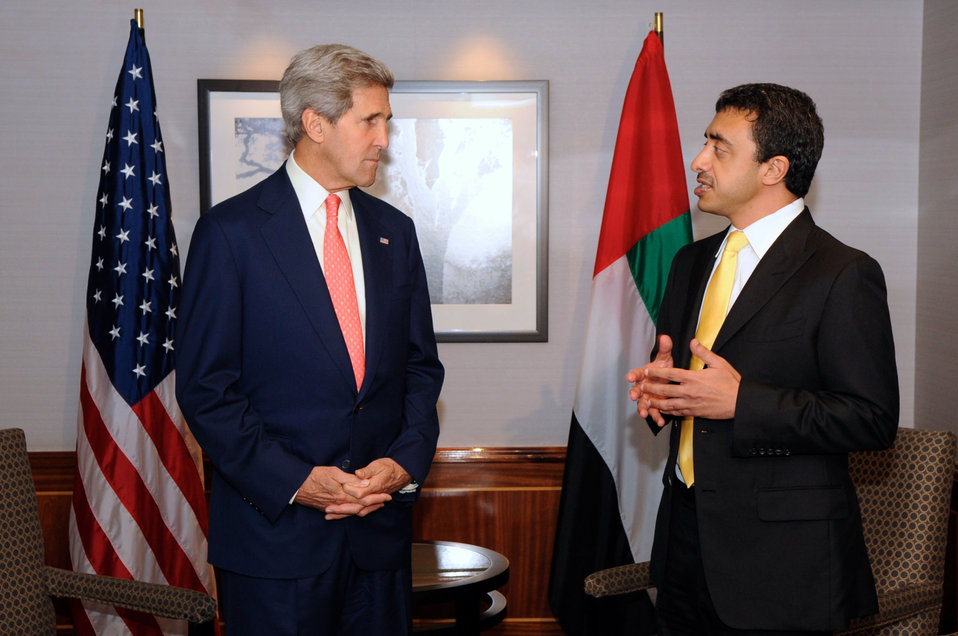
Secretary Kerry Meets With UAE Foreign Minister Abdullah bin Zayed

U.S. Secretary of State John Kerry listens as he and United Arab Emirates Foreign Minister Abdullah bin Zayed appear before reporters in London, United Kingdom, on August 2, 2013.